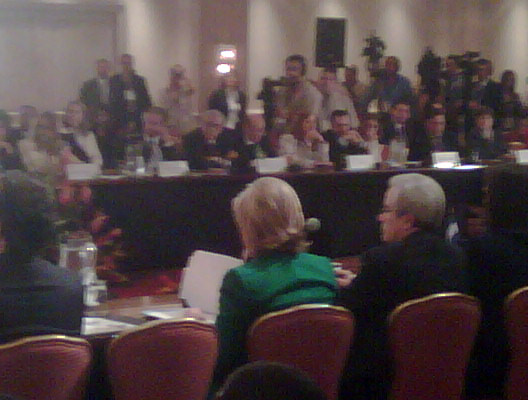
Behind the Scenes: Pathways to Prosperity Conference

U.S. Secretary of State Hillary Rodham Clinton attends the Pathways to Prosperity conference in San Jose, Costa Rica, March 4, 2010.